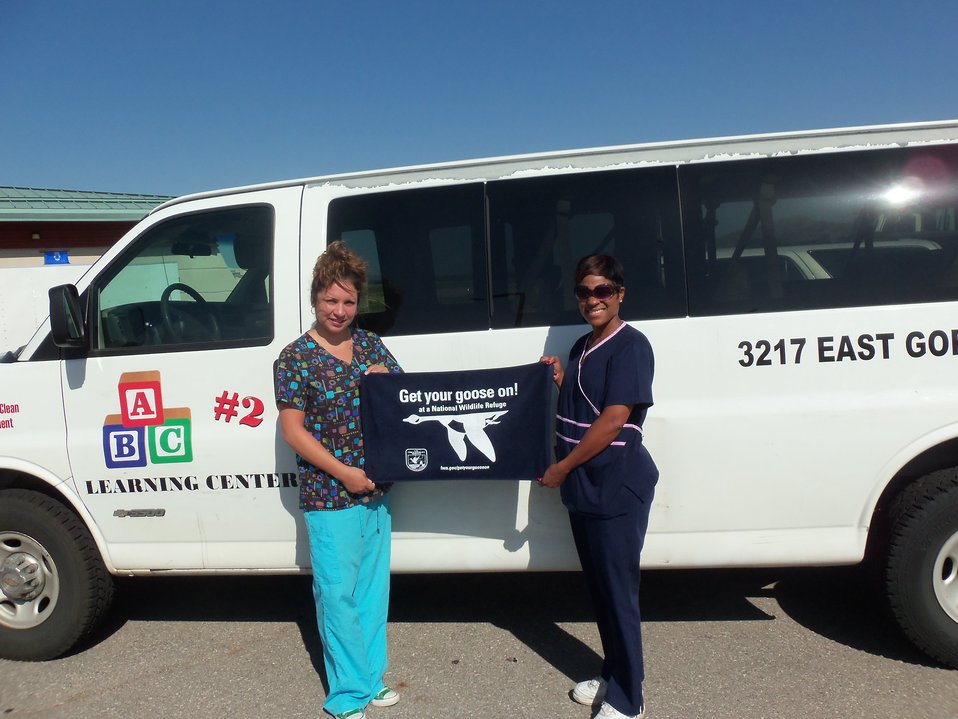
Get Your Goose On!

Wichita Mountains National Wildlife Refuge in Oklahoma.